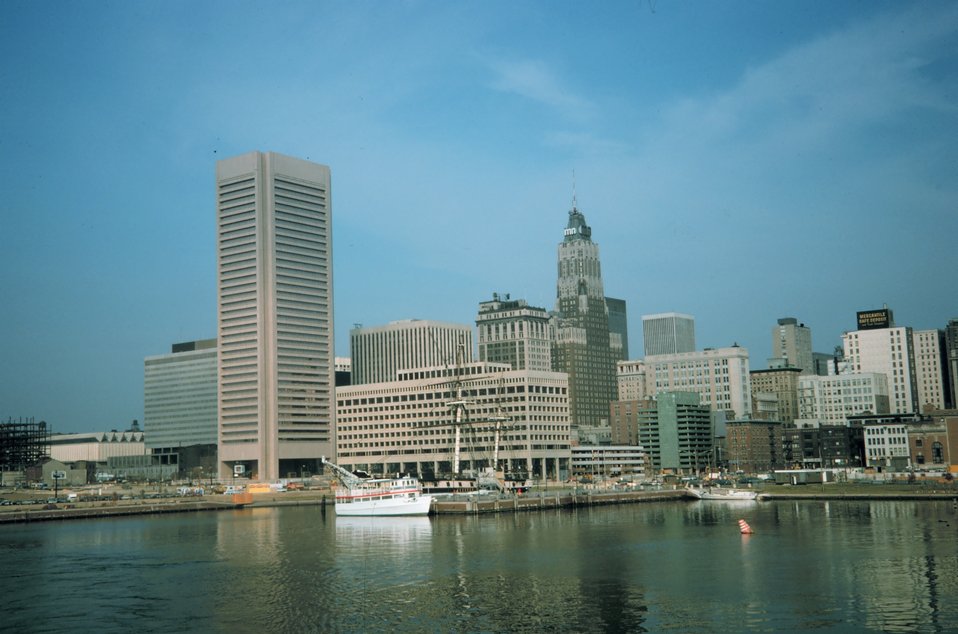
View of downtown Baltimore from the Inner Harbor area